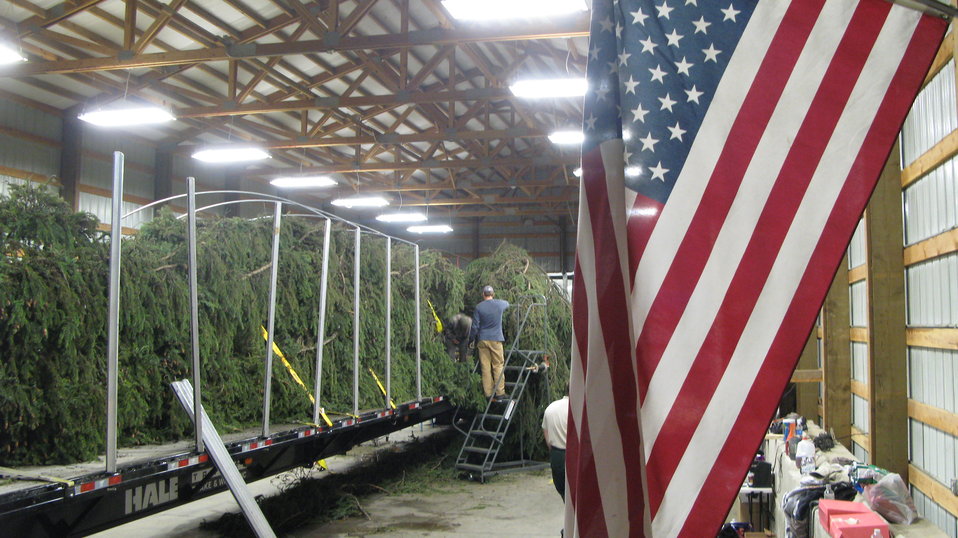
CCT frames flag

In a staging area, workers carefully begin the process of wrapping the tree to protect it during the 5,000-mile journey from Colville National Forest to the west lawn of the U.S. Capitol in Washington, D.C.